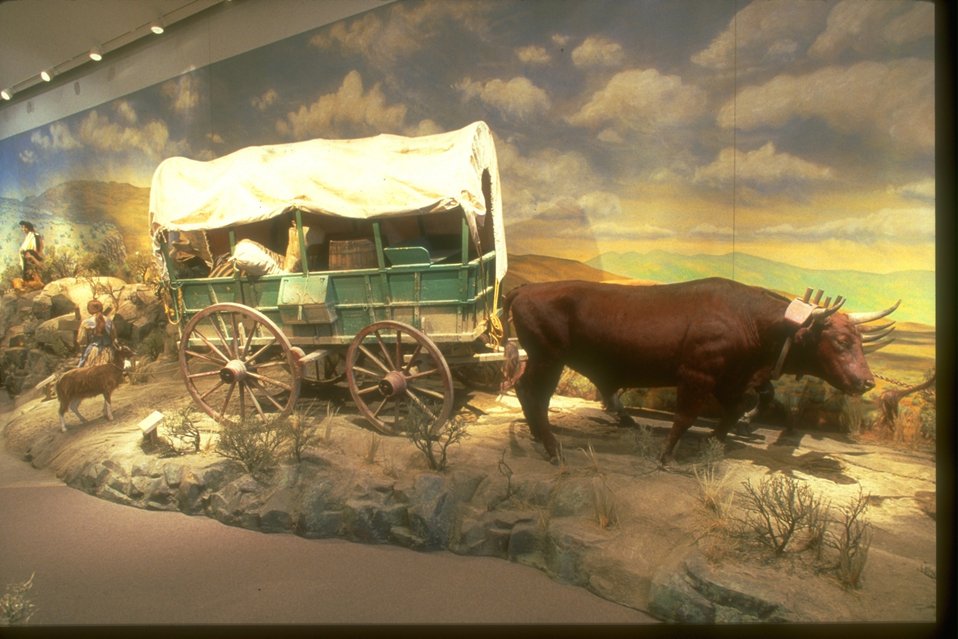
Very full covered wagon being pulled by oxen with a child and a goat following. On display in the NHOTIC gallery.